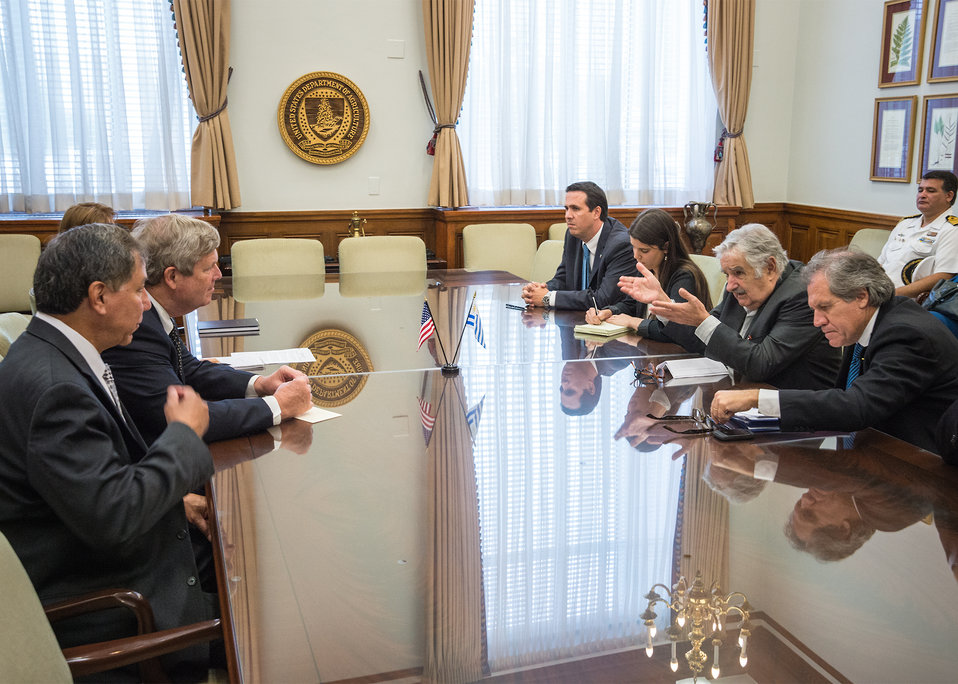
Agriculture Secretary Tom Vilsack and President Jose Mujica of Uruguay discuss cooperation in agricultural research, production and climate changes on agriculture at the U.S. Department of Agriculture (USDA) in Washington, D.C. on Wednesday, May 14, 2014. USDA Marketing and Regulatory Programs (MRP) Under Secretary Ed Avalos and USDA Farm and Foreign Agricultural Services (FFAS) Deputy Under Secretary Darci Vetter participated in the discussion.